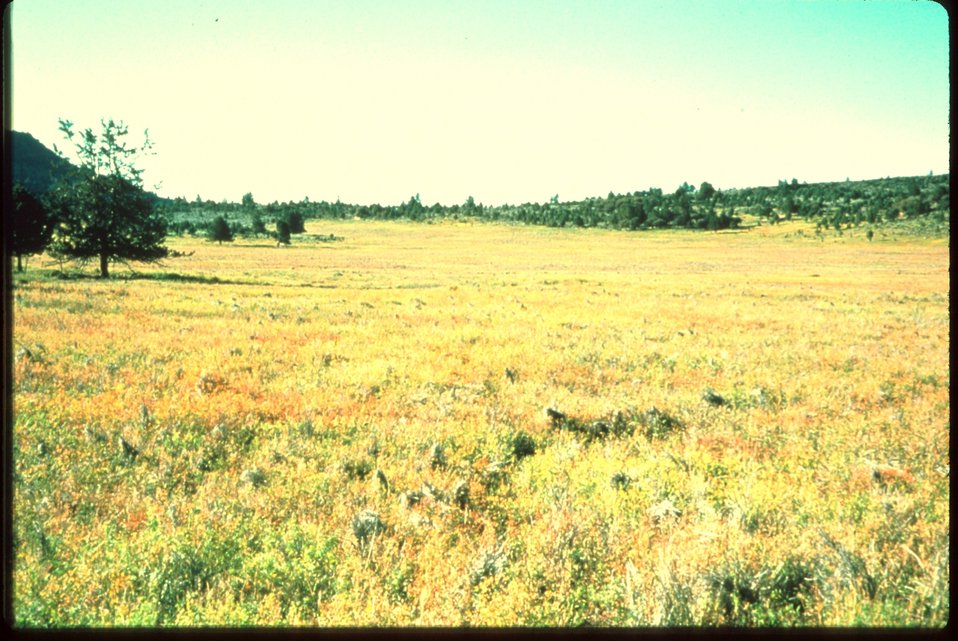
Leafy Spurge Idaho vegetation Plants in BLM